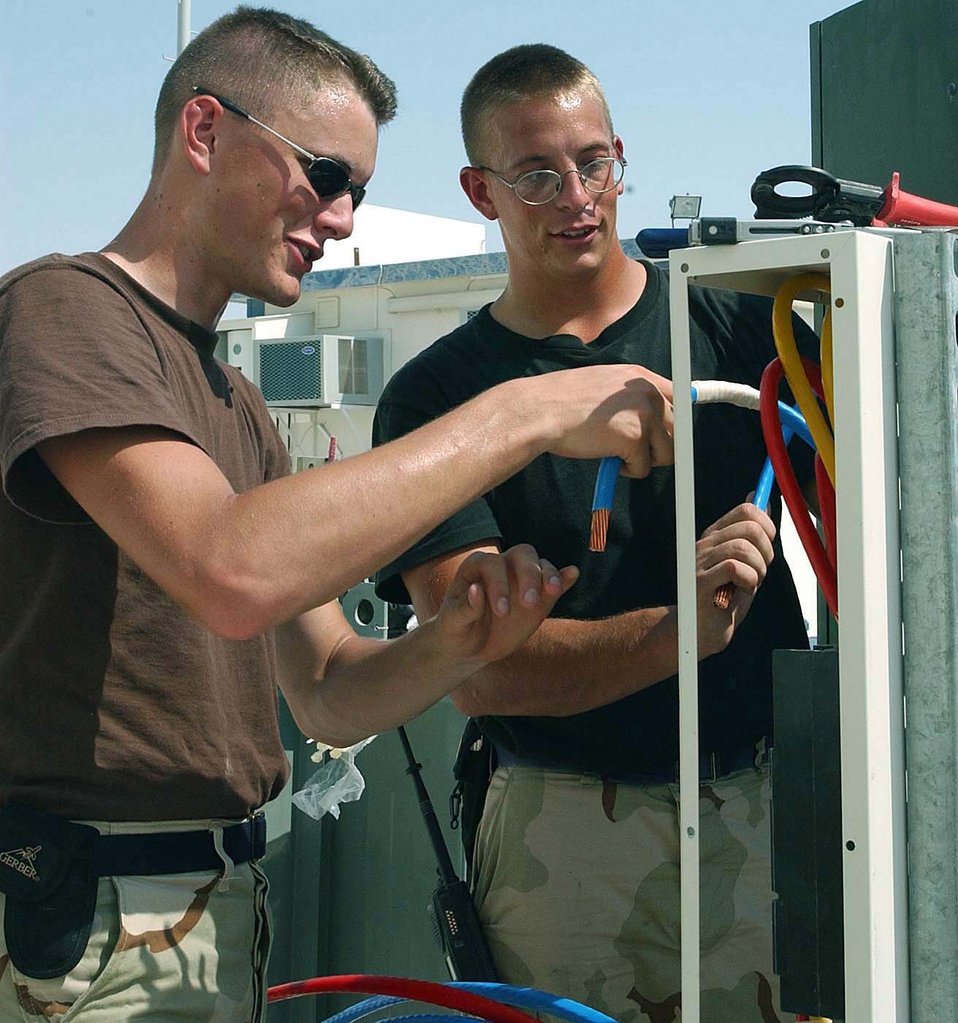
Let there be power!

AL UDEID AIR BASE, Qatar -- Airman 1st Class Thomas Quinton (left) and Senior Airman Nick Nenichka install a new breaker to ensure maximum power efficiency at the Combined Air Operations Center here. Both Airmen are assigned to the 379th Air Expeditionary Wing's civil engineer squadron. Airman Quinton is deployed from Seymour Johnson Air Force Base, N.C., and Airman Nenichka is from Robins Air Force Base, Ga.